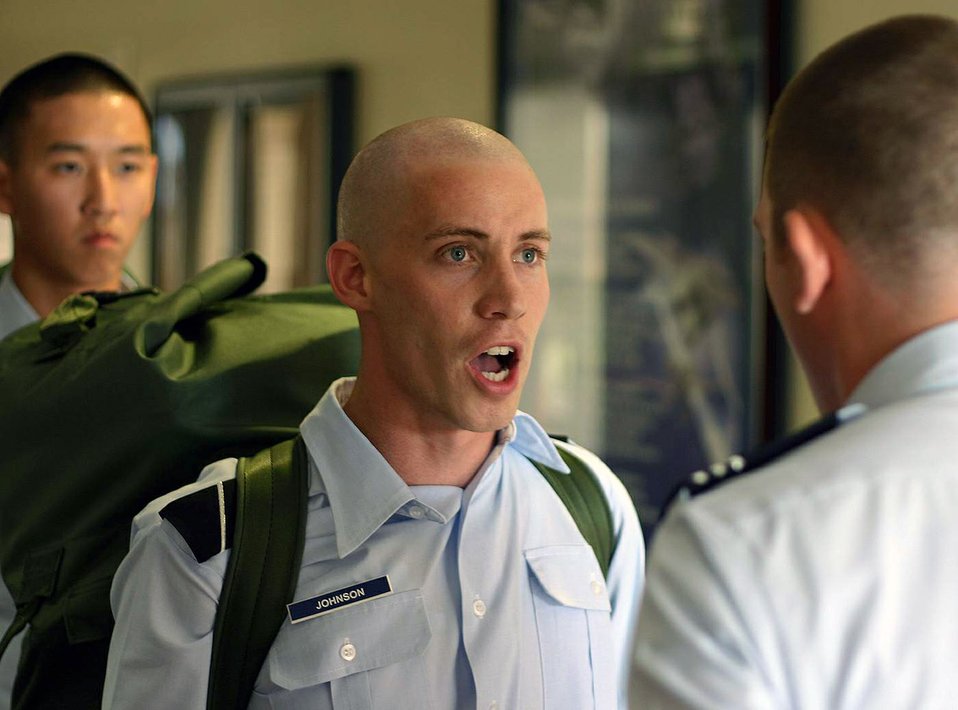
First wave of ROTC field training gets underway

Cadet Jason Johnson reports in for his room assignment during ROTC field training initial inprocessing May 8 at Maxwell Air Force Base, Ala. More than 360 ROTC cadets, mostly rising juniors from 144 colleges nationwide, started off the first class of summer field training at Maxwell AFB. Cadet Johnson is from Det. 850 -- Weber State University in Utah.